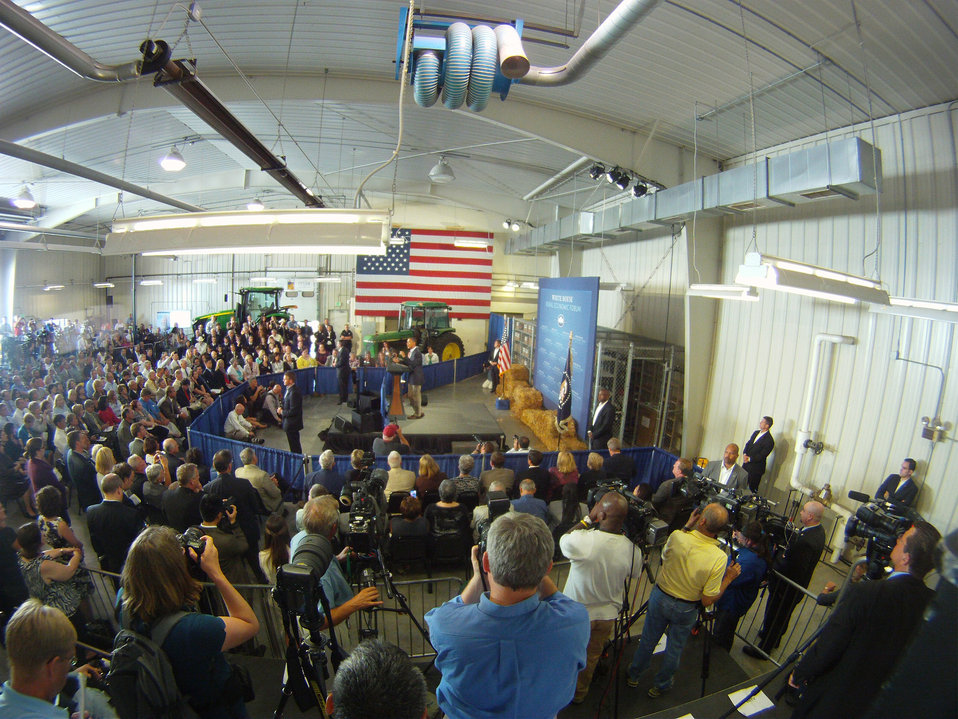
President Barack Obama speaking at the Northeast Iowa Community College, for a White House Rural Economic Forum on Tuesday, Aug. 16, 2011. The President’s visit will focus on agriculture’s contribution to the national economy, and how to create more jobs in rural America.